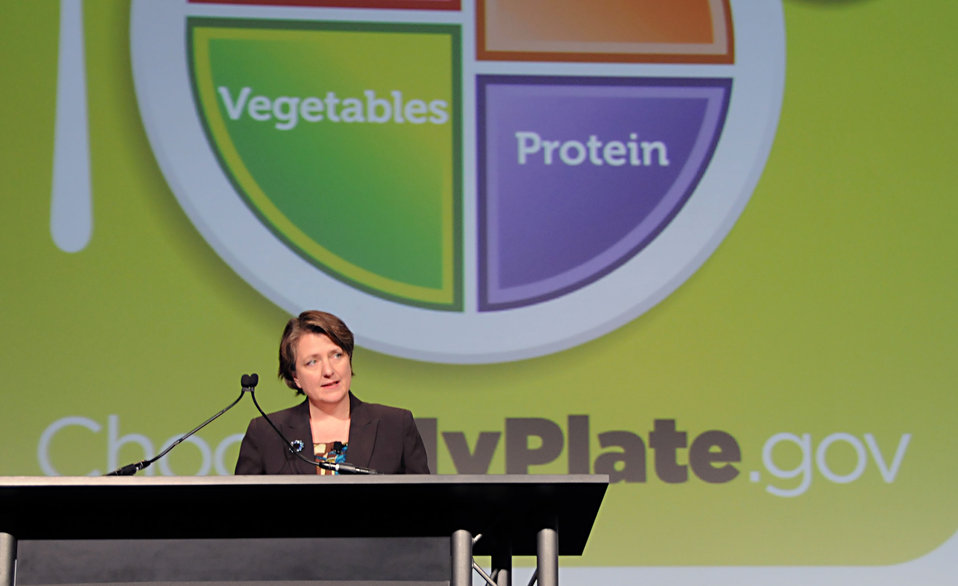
Agriculture Deputy Secretary Kathleen Merrigan speaks at the Produce Marketing Association Fresh Summit on Friday, October 14, 2011 in Atlanta, Ga.